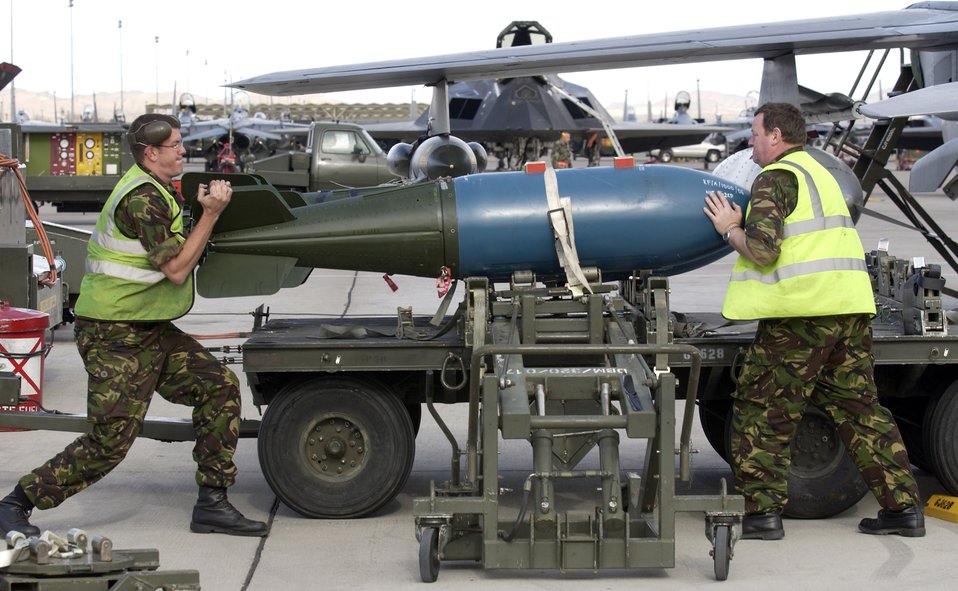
Red Flag

NELLIS AIR FORCE BASE, Nev. (AFPN) -- Royal Air Force Sgt. John Longstaff (left) and Senior Aircraftsman Philip Martin load an inert 1,000-pound bomb on a British Tornado jet Jan. 25 during Red Flag 06-1 here Jan. 21 to Feb. 18. Red Flag tests fliers' war-fighting skills in realistic combat situations. Flights involve more than 80 aircraft, including B-2 Spirit bombers and F-16 Fighting Falcons. The aircraft will fly missions day and night at the nearby Nevada Test and Training Range. Along with the Air Force, units from the Army, Navy, Marine Corps, United Kingdom and Australia are participating.